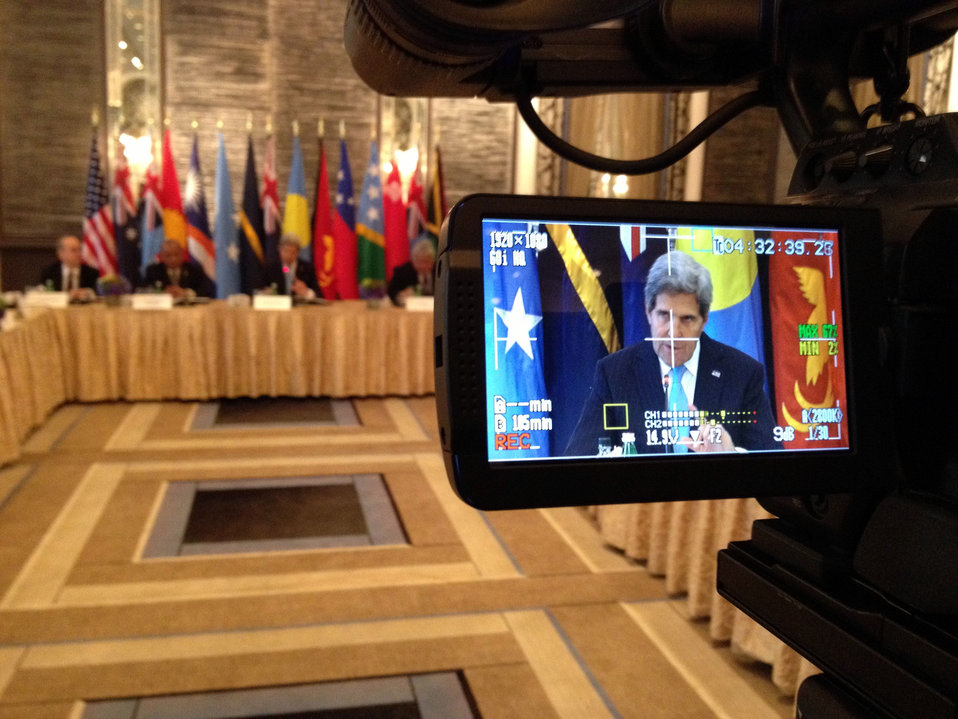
Secretary Kerry Participates in a Meeting of the Pacific Islands Forum

U.S. Secretary of State John Kerry participates in a meeting of the Pacific Islands Forum in New York City on September 27, 2013.